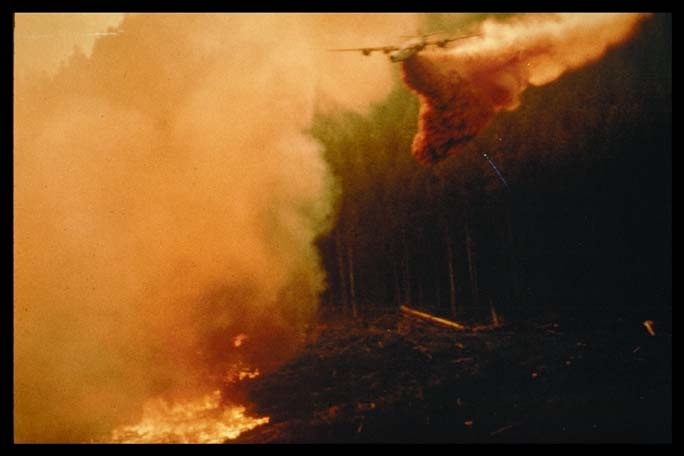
Airtanker drop